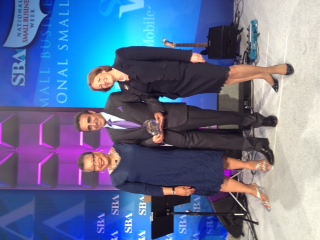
Chobani President and CEO Ulukaya With SBA Administrator Mills and Deputy SBA Adminsitrator Johns

Chobani President and CEO Hamdi Ulukaya delivers poses for a photo with u.S. Small Business Administration (SBA) Deputy Administrator Marie Johns, left, and SBA Administrator Karen Mills, right, after receiving the National Entrepreneurial Success of the Year Award for 2012 by the SBA in Washington, D.C., on May 23, 2012.